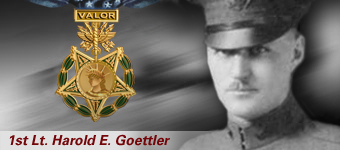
1st Lt. Harold E. Goettler, Medal of Honor recipient.